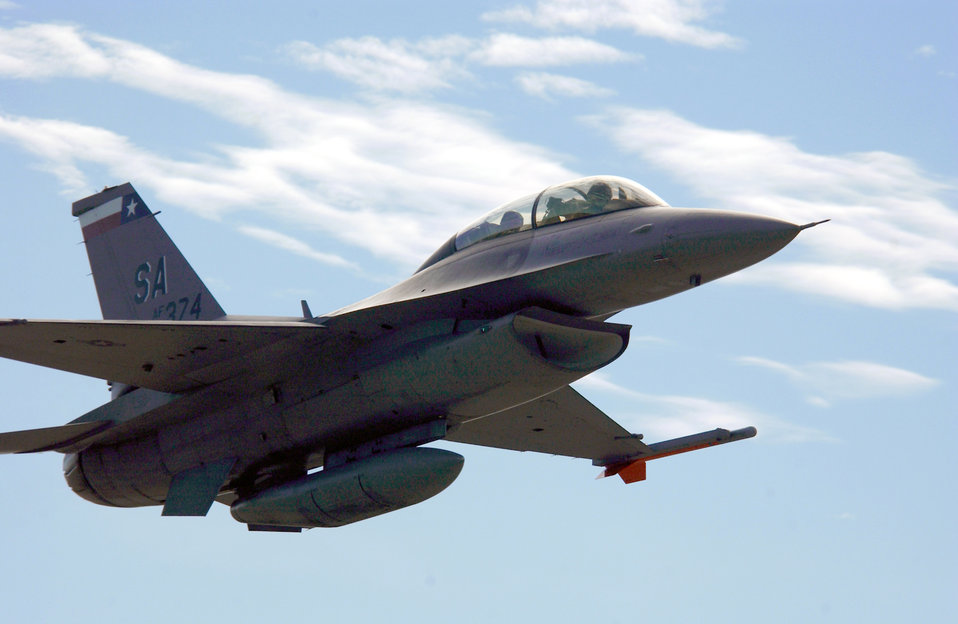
Falcons in Poland

LASK AIR BASE, Poland -- An F-16 Fighting Falcon returns here after flying a familiarization flight Sept. 14. The Texas Air National Guard's 182nd Fighter Squadron is here to familiarize members of the Polish Air Force with the F-16 capabilities along with its day-to-day operations and maintenance. The squadron is from Lackland Air Force Base, Texas.